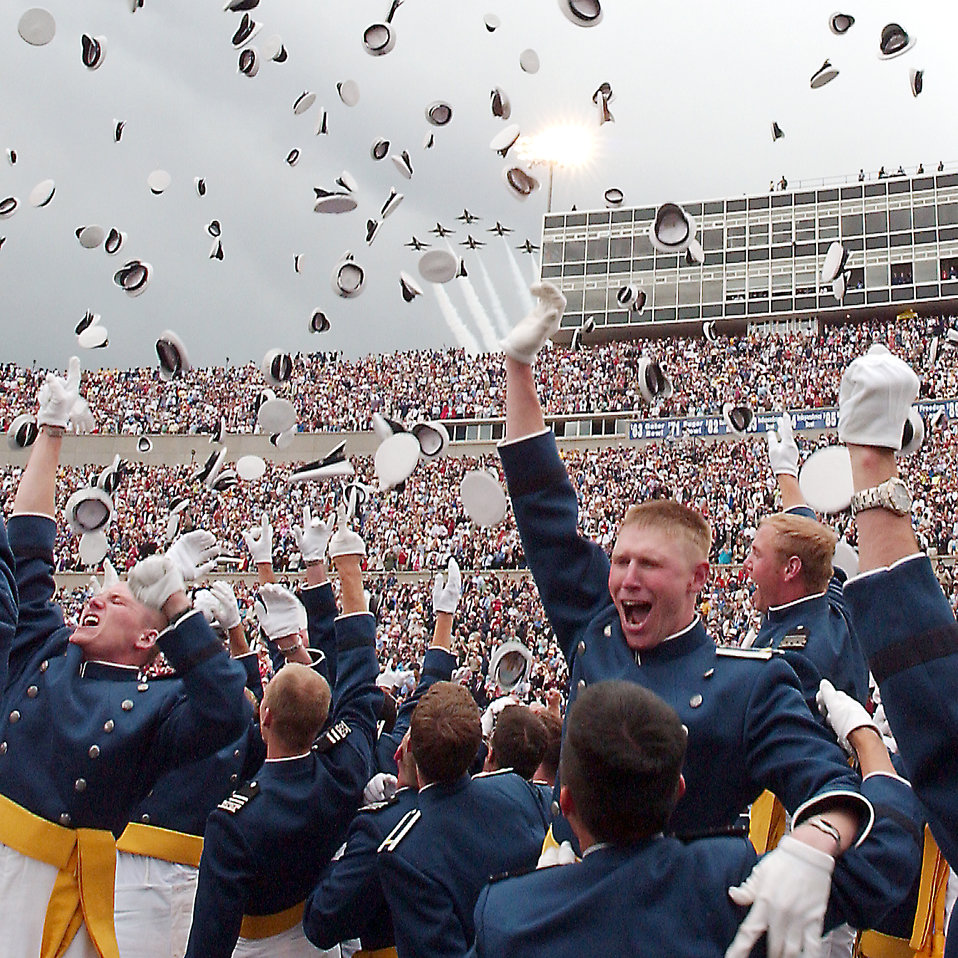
Class of 2004

U.S. AIR FORCE ACADEMY, Colo. -- Jubilant cadets toss their hats as the U.S. Air Force Thunderbirds fly over during the Class of 2004's graduation June 2 here.